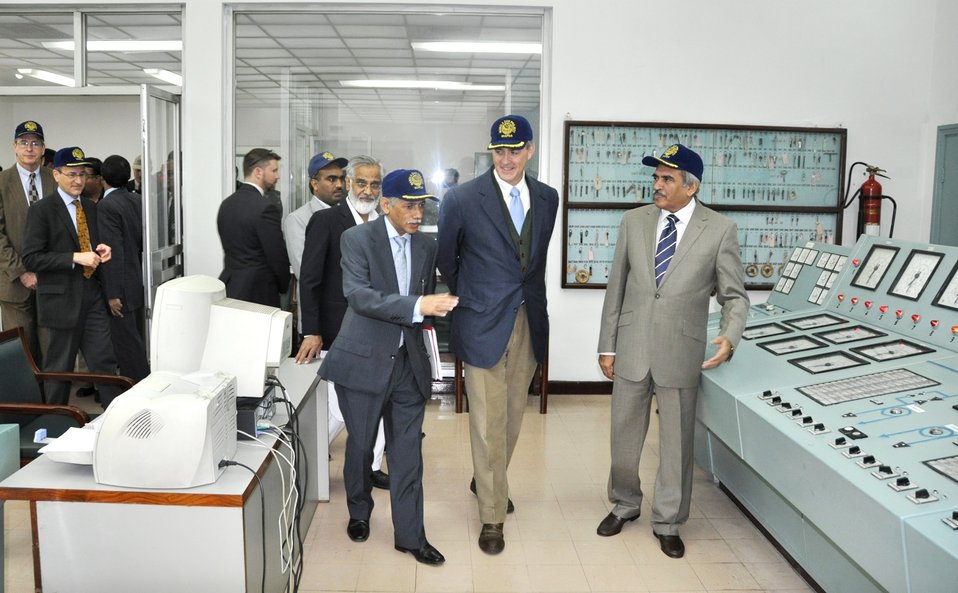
At the control center